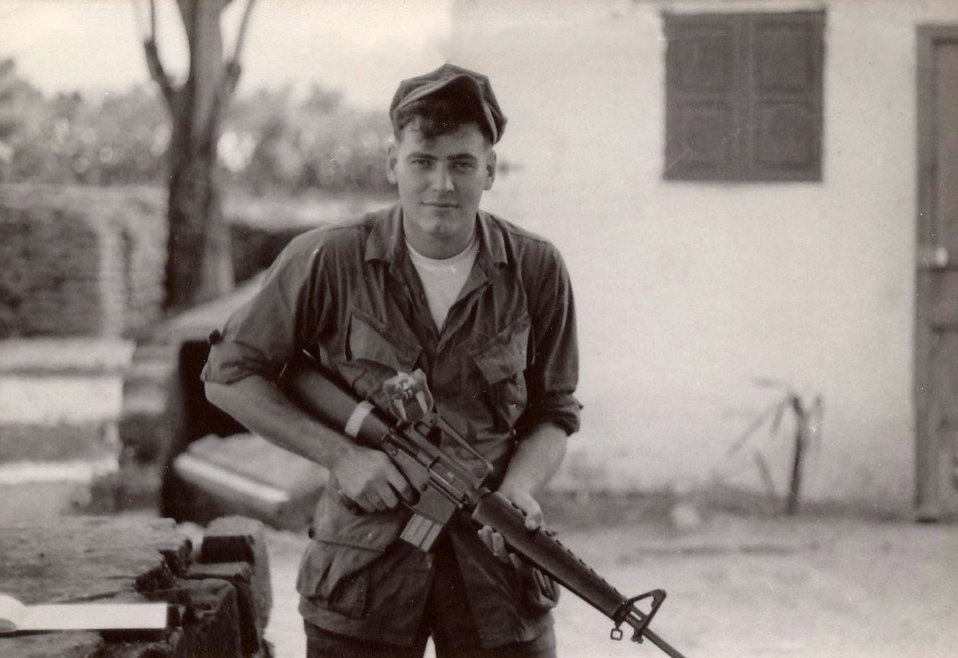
Joe Witt USMC Vietnam 1968

Joe Witt, a Course Leader/Wildlife Biologist with the Branch of Conservation Science and Policy at the National Conservation Training Center, served with the Marine Corps from 1966 to 1969 in Vietnam, Cuba (GTMO), California and North Carolina. He rose to Lance Corporal and received a purple heart.